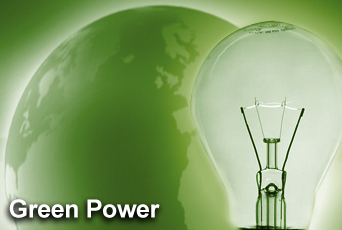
Air Force recognized as top federal green power purchaser

For the third year in a row, the Air Force heads the Environmental Protection Agency's list of Top 10 federal government green power purchasers in the Green Power Partnership. The list highlights EPA's federal Green Power Partners that have completed the largest annual voluntary purchases through Dec. 31, 2006.